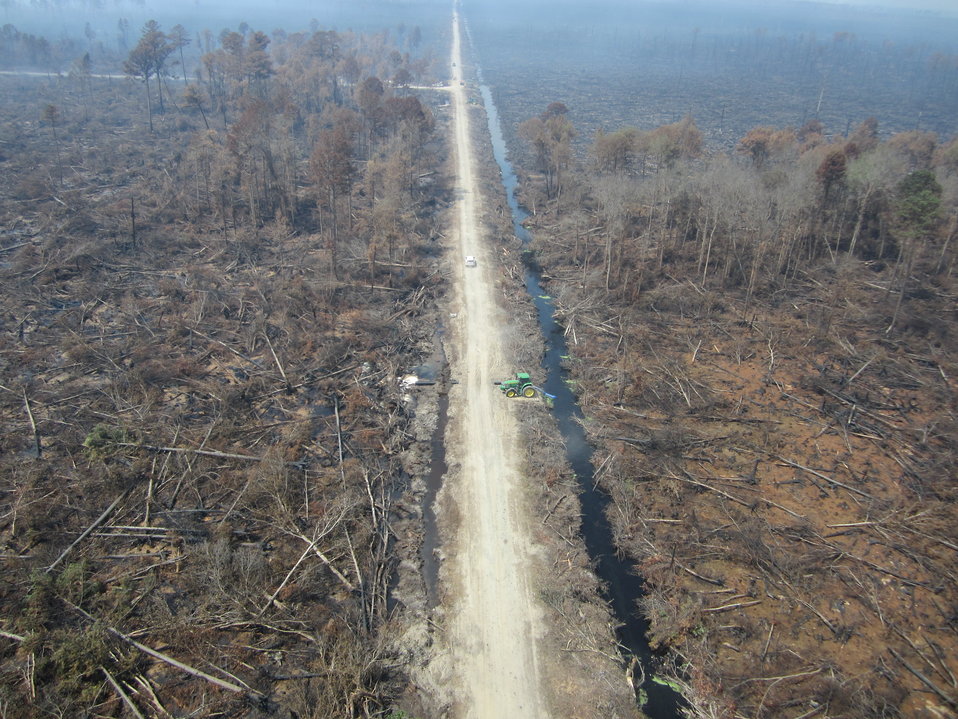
Corapeake Road Lateral West Fire

Suffolk, VA, August 2011: A tractor-driven crisafulli pump draws water out of Corapeake Ditch and pumps it through a pipe buried underneath the road to flood burning peat at the Lateral West Fire in Great Dismal Swamp .